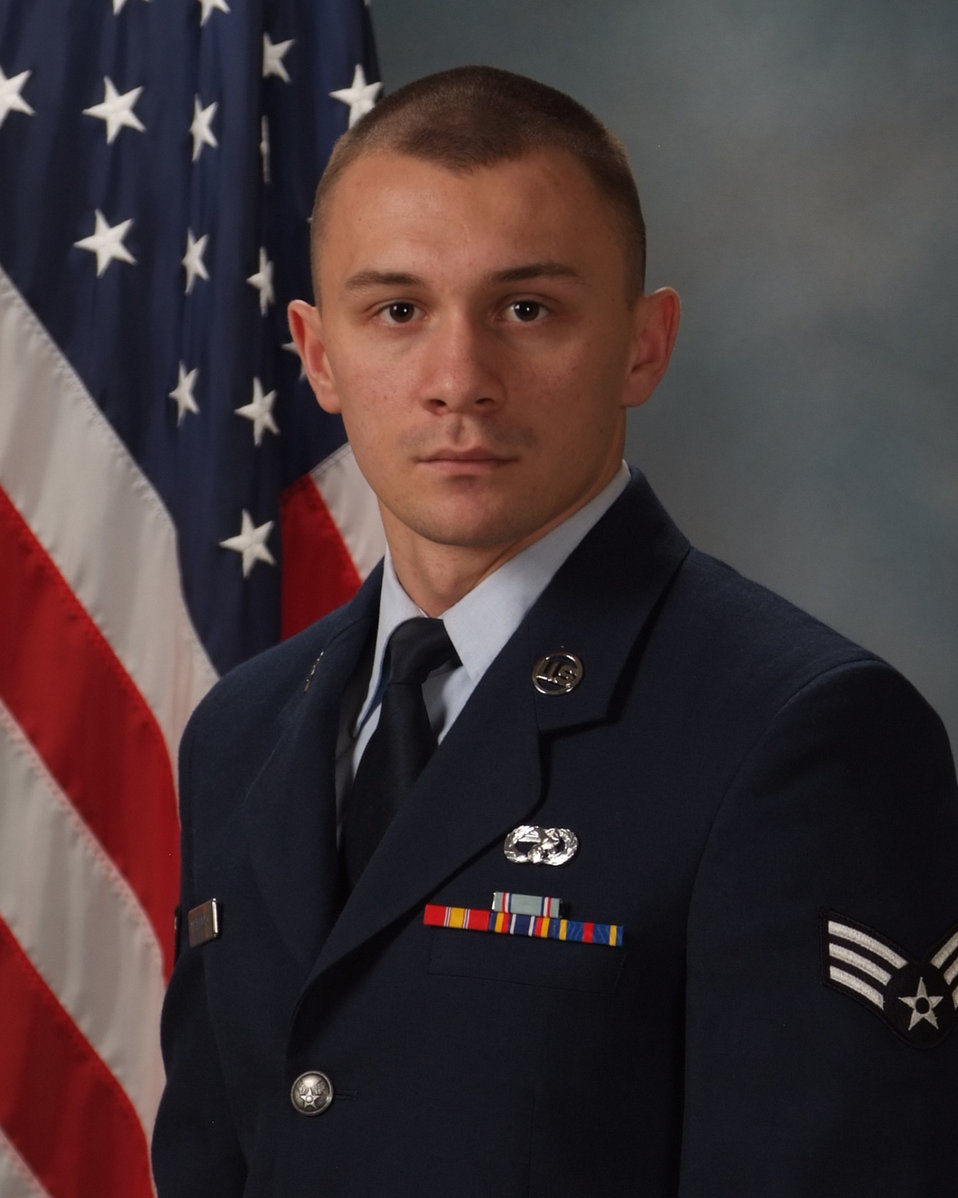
Triumph of survival

Senior Airman Muhamed Mehmedovic was saved from starvation by the U.S. Air Force when they air dropped food from C-130 Hercules aircraft in Bosnia from 1992 to 1995. Mehmedovic, a 19th Logistic Readiness Squadron air transportation journeyman, now pays homage to the country he said saved his family's life.